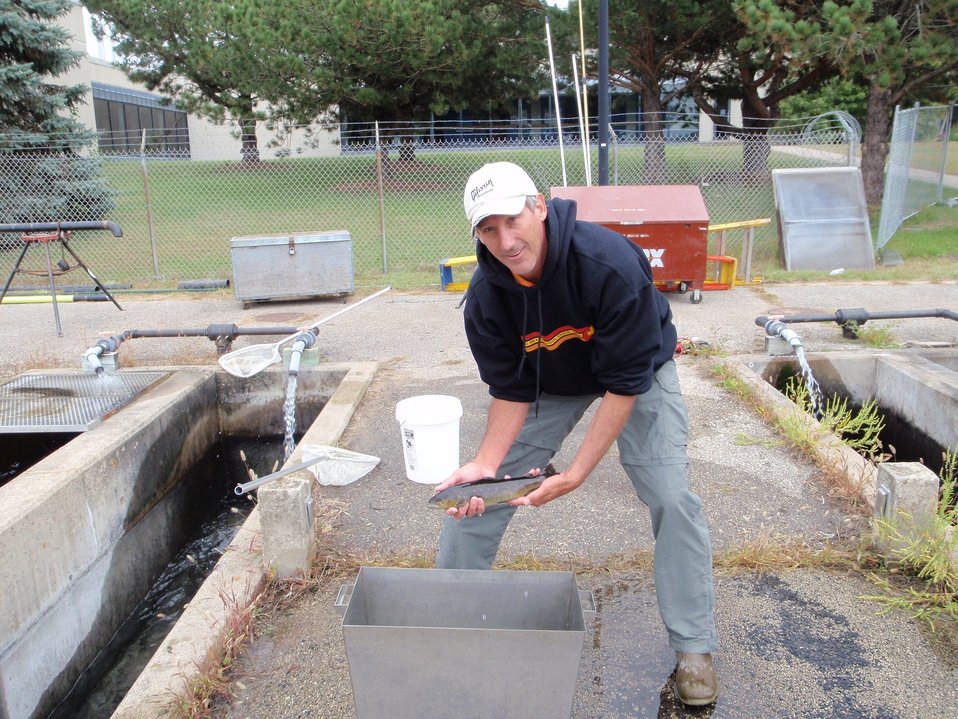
Jim Bowker working with brown trout at the Upper Midwest Environmental Sciences Center during a benzocaine field efficacy study.

Rachel Carson Award for Scientific Excellence (Group) – 2013